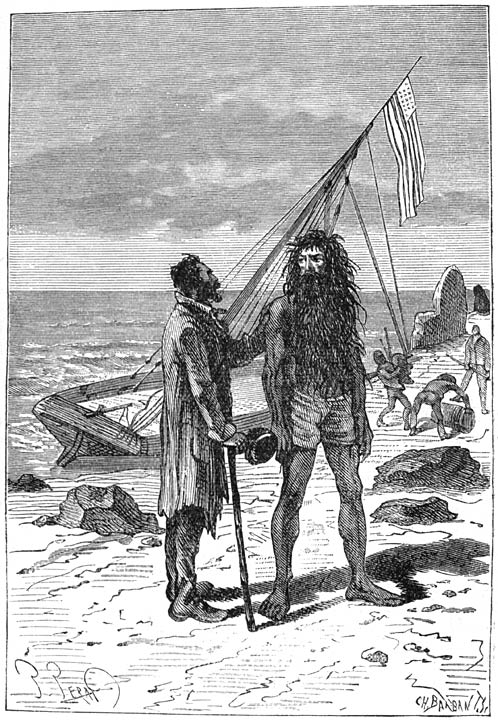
An illustration from Jules Verne's novel 'The Mysterious Island' (1873-74) drawn by Jules Férat. Polski: Ilustracja powieści Juliusza Verne'a 'Tajemnicza wyspa' (tytuł przekładany także jako: Wyspa tajemnicza, 1873-74) autorstwa Julesa Férata. Français : Jules Verne: 'L’Île mystérieuse' (1873-74), dessins par Jules Férat. Orginal description from the book: Français : Cyrus Smith lui mit la main sur l’épaule.